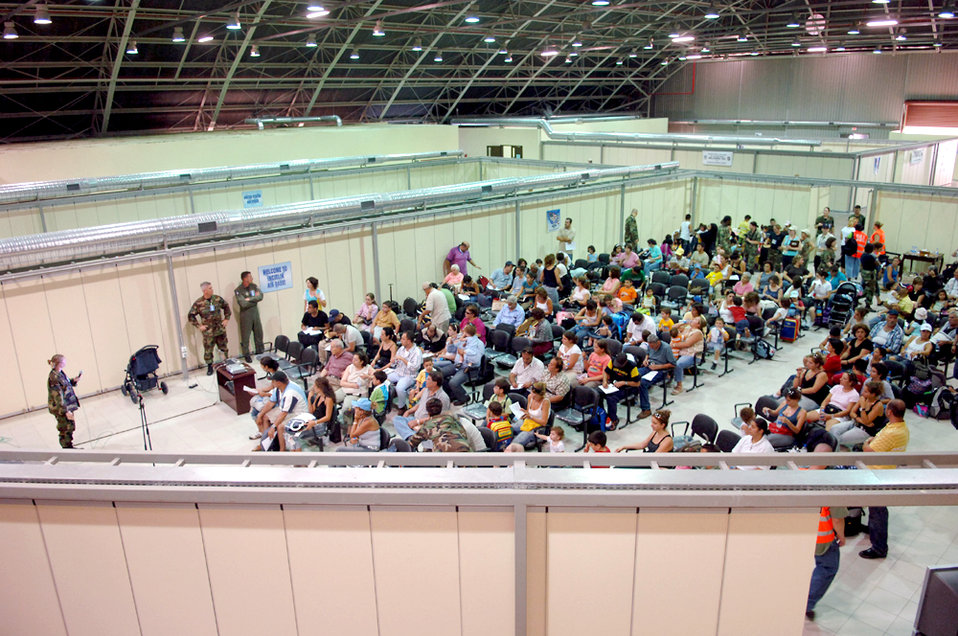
Departure efforts through Incirlik continue

Staff Sgt. Angela Clear (far left) conducts a security briefing for American citizens at Incirlik Air Base, Turkey, on July 24. Sergeant Clear is with the 39th Security Forces Squadron.